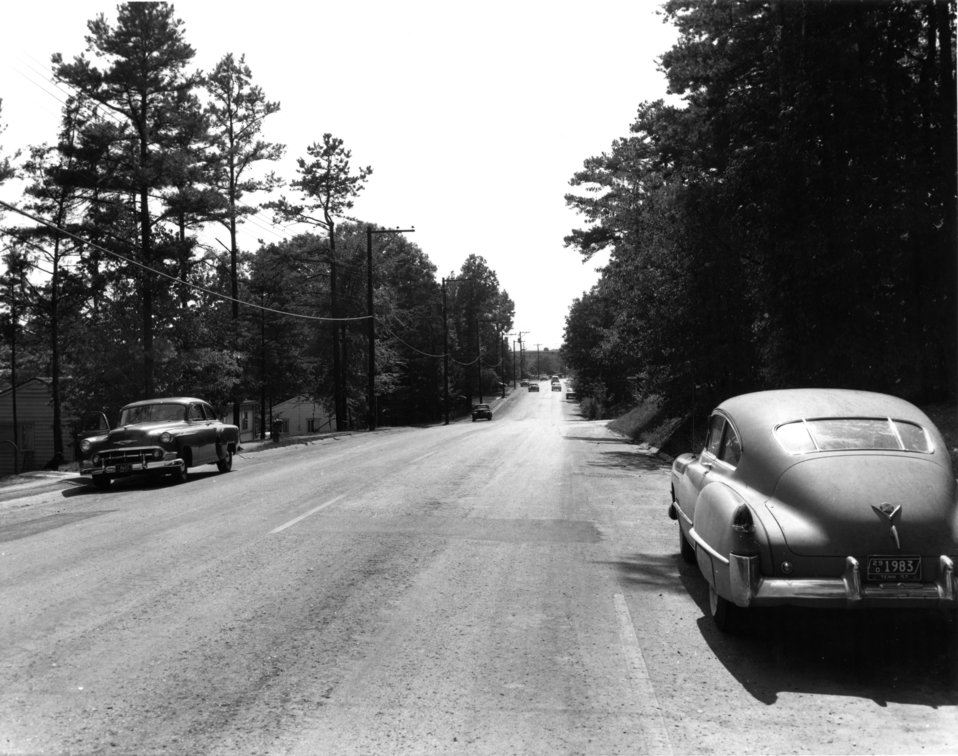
Recreation at Oak Ridge